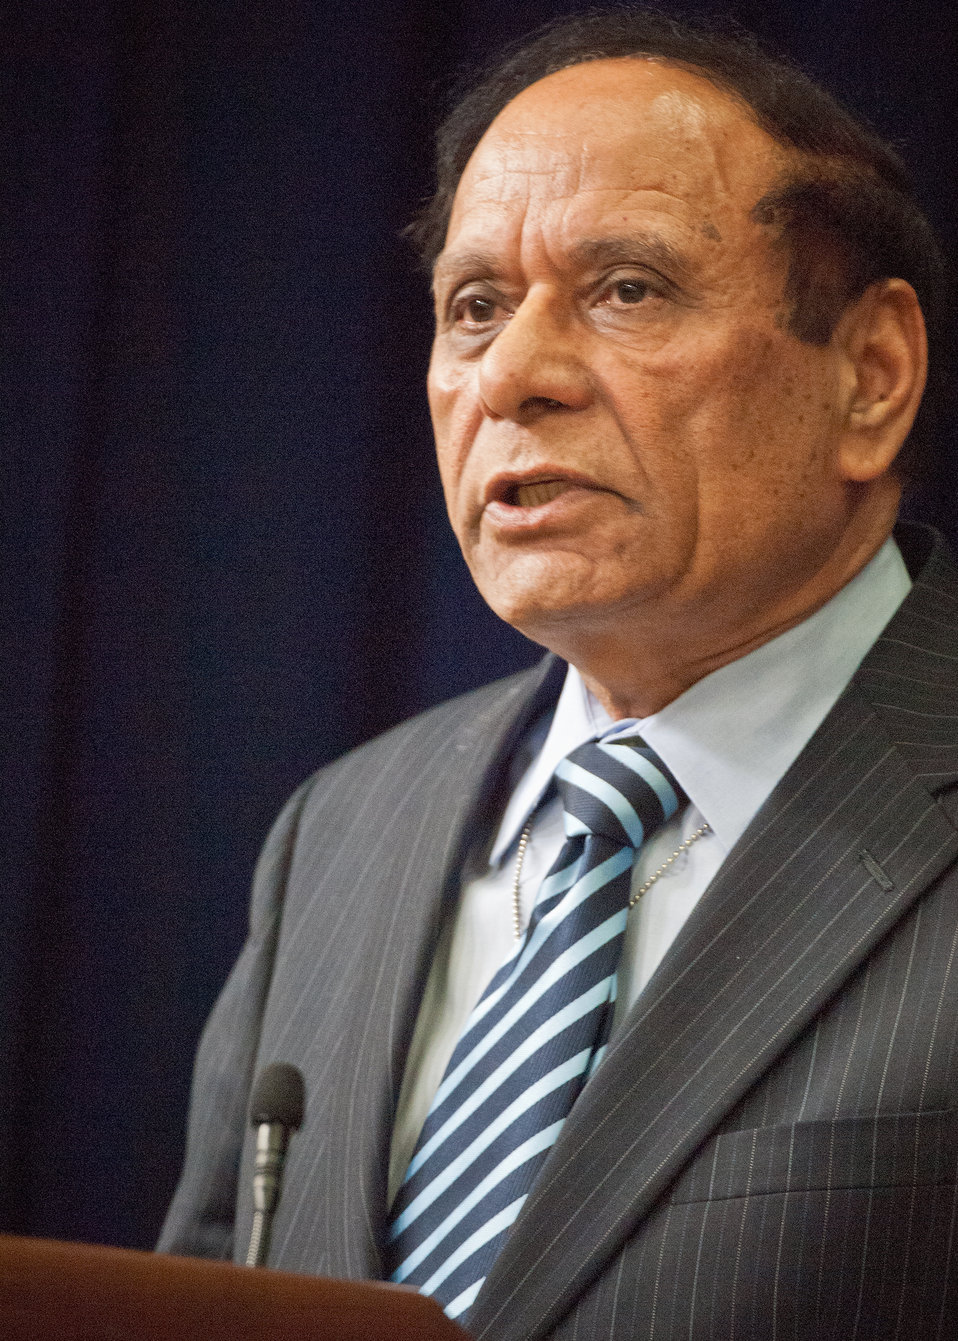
Dr. Isi Siddiqui, Chief Agriculture Negotiator, United States Trade Representative discussed agricultural trade at the 11th Annual Meeting of State Agriculture and Rural Leaders at the Eisenhower Executive Office Building in Washington, D.C., Friday, January 6, 2012.